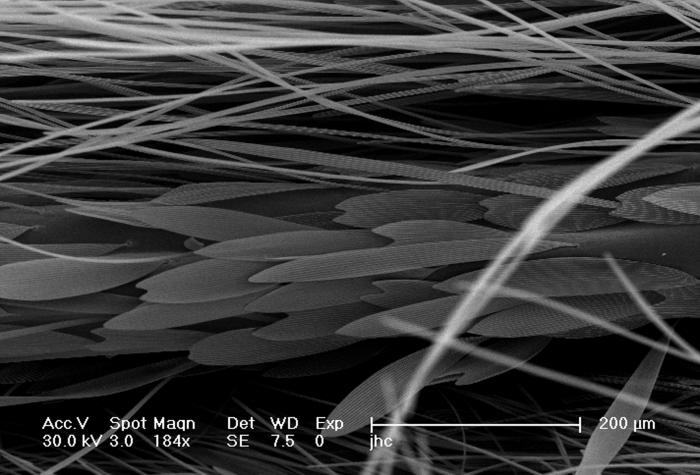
Under a moderately high magnification of 184X, this scanning electron micrograph (SEM) revealed some of the ultrastructural morphology located on the head region of an unidentified white moth, which had been found deceased on the ground in the suburbs of Decatur, Georgia. In this particular view, what appears to be 'hairs', was actually a number of exoskeletal sensorial structures known as 'setae', located atop the insect's head. You'll also note the rows of 'scales' buried amongst the setae. Both the scales and setae are composed of the same chitinous material.